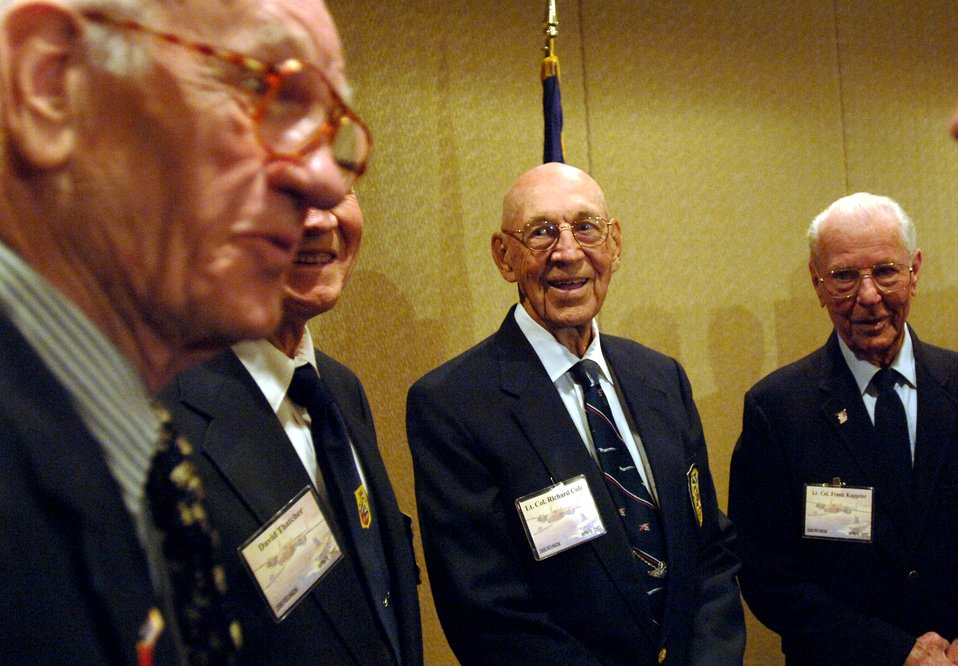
Doolittle Raiders celebrate 64th reunion

(Left to right) Tom Griffin, David Thatcher, Dick Cole and Frank Kappeler, four of the remaining 16 Doolittle Raiders, joke with attendees at the group's 64th reunion in Dayton, Ohio, on Tuesday, April 18, 2006.